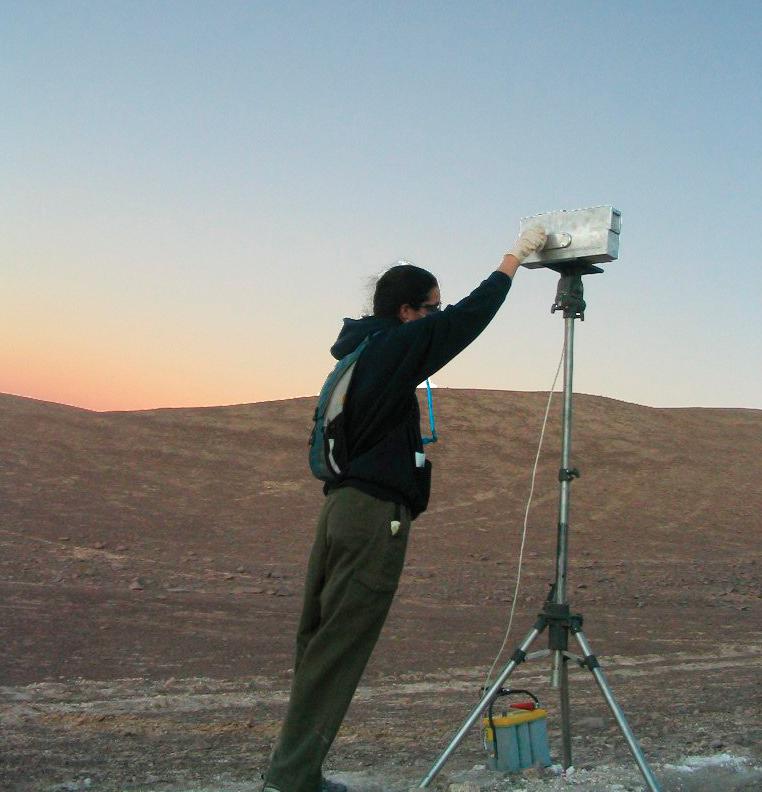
SAVANNAH RIVER NATIONAL LABORATORY'S ATMOSPHERIC CONTAMINANT EXTRACTOR DEMONSTRATED IN THE DESERT.

THE ACE (ATMOSPHERIC CONTAMINANT EXTRACTOR) COLLECTS ALL AEROSOLS, INCLUDING CHEMICAL AGENTS, RADIOACTIVE PARTICLES, MICROORGANISMS, SUCH AS SPORES, BACTERIA AND FUNGI, AS WELL AS RESIDUAL SUBSTANCES FROM EXPLOSIVES. ACE IS ALSO PROVING TO HAVE USEFULNESS BEYOND HOMELAND SECURITY PURPOSES. IT WAS CHOSEN BY NASA FOR SURROGATE TESTS OF MARTIAN TYPE LANDSCAPES AND TO TEST THE AIR QUALITY ON THE SPACE STATION.